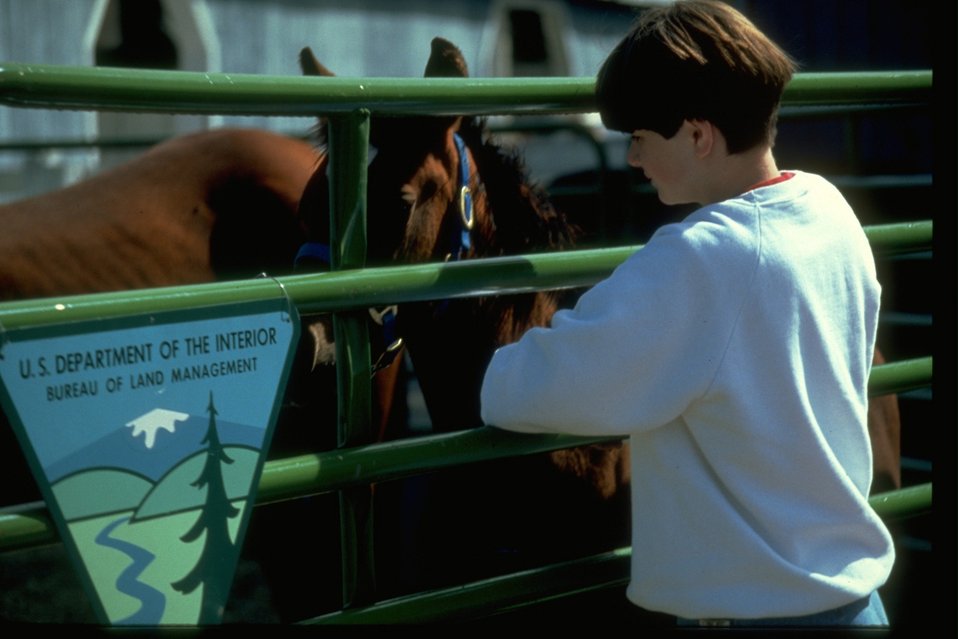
Wild Horse & Burro adoption.